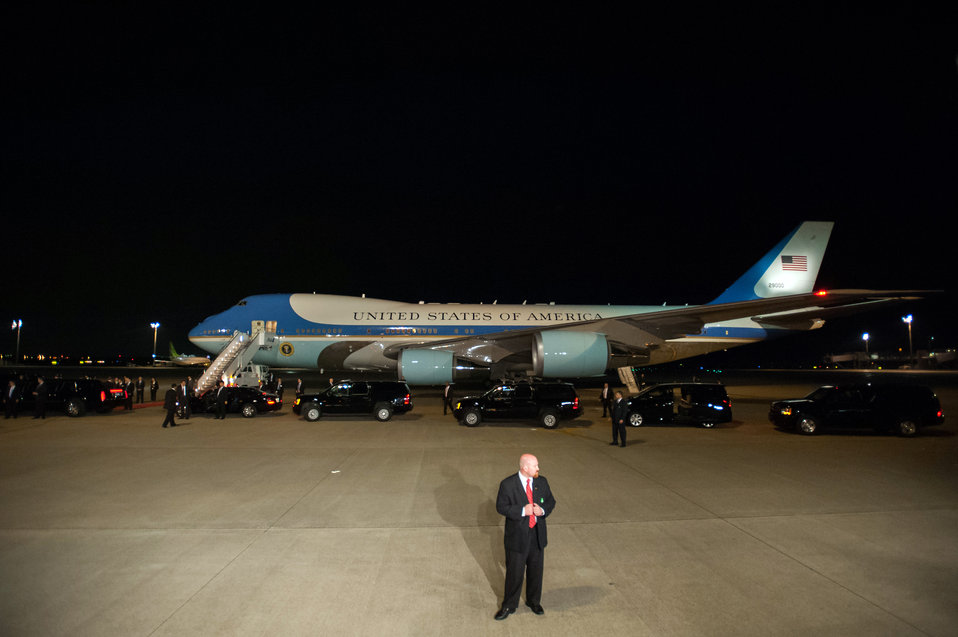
Air Force One Touches Down in Tokyo

Air Force One touches down at the Tokyo International Airport in Japan on April 23, 2014.